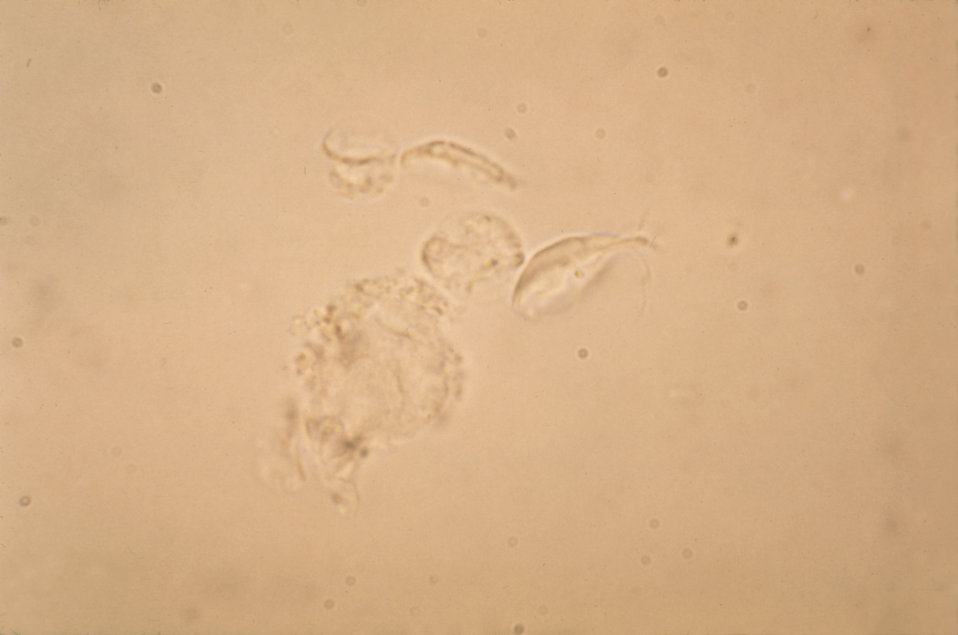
This photomicrograph reveals Giardia lamblia trophozoites that can be found in the small intestine of an infected host.